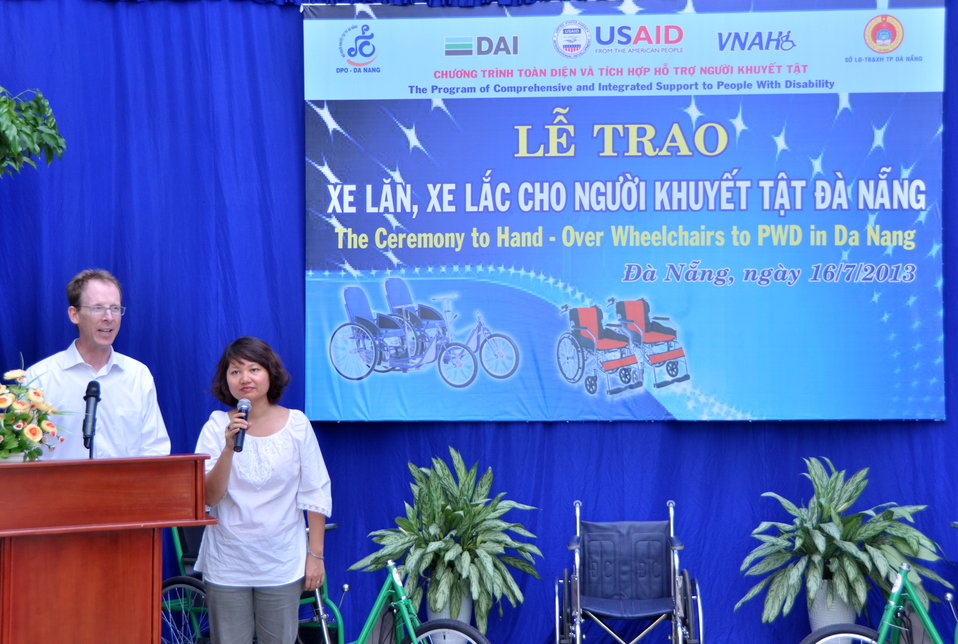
USAID Project Supports Rehabilitation Department for Children and Wheelchair Distribution in Danang

USAID Mission Director Joakim Parker speaks at the handover ceremony.